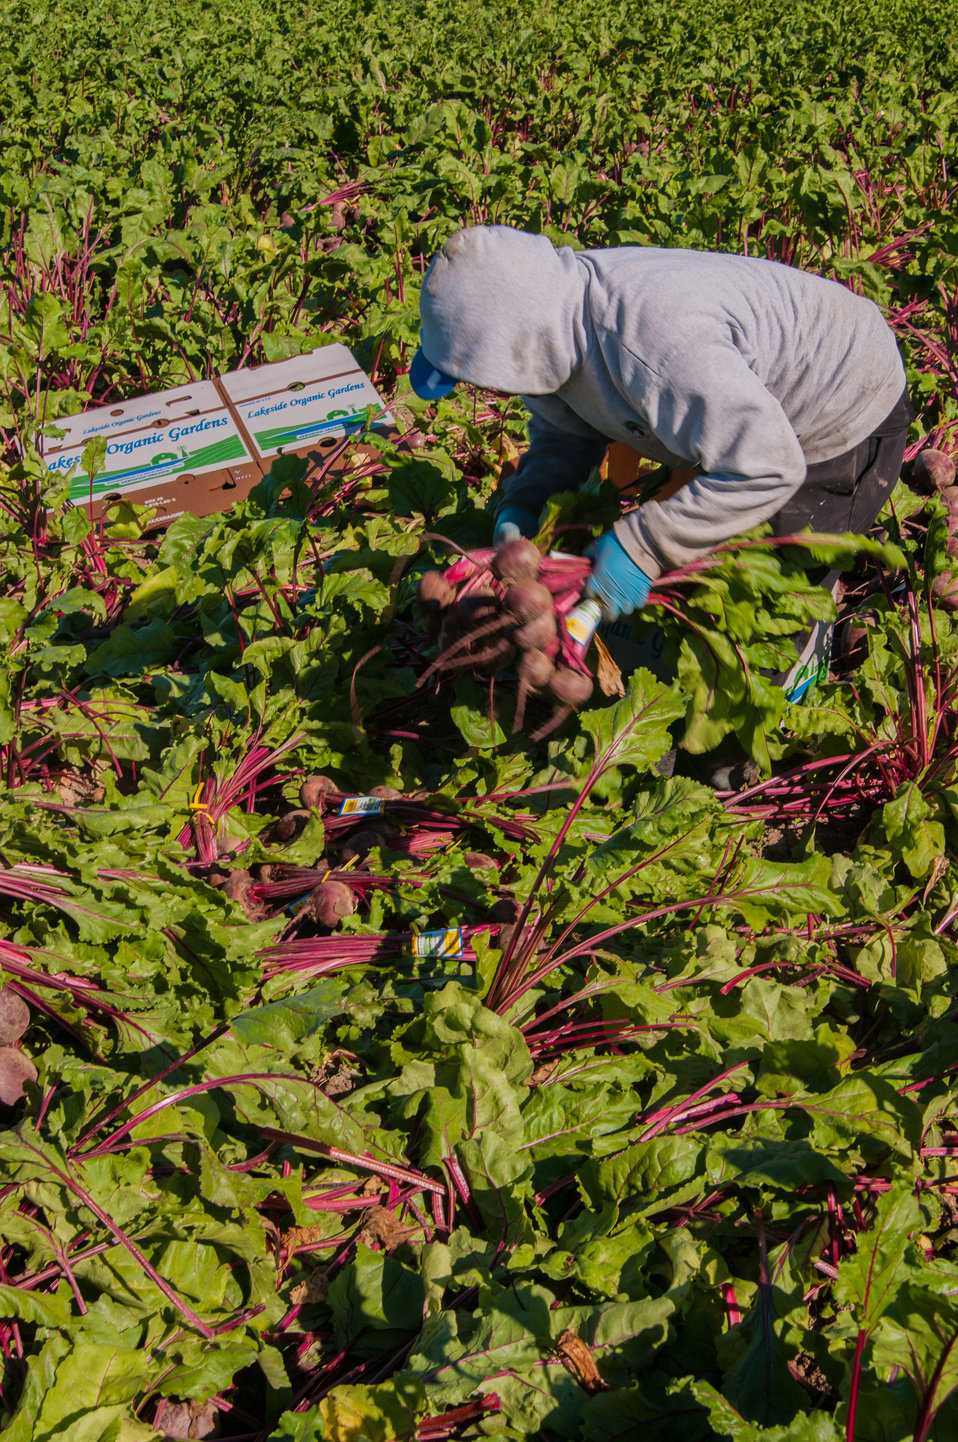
Migrant workers harvest Beets at Lakeside Organic Gardens in Watsonville, CA on Tuesday, Aug. 27, 2013.